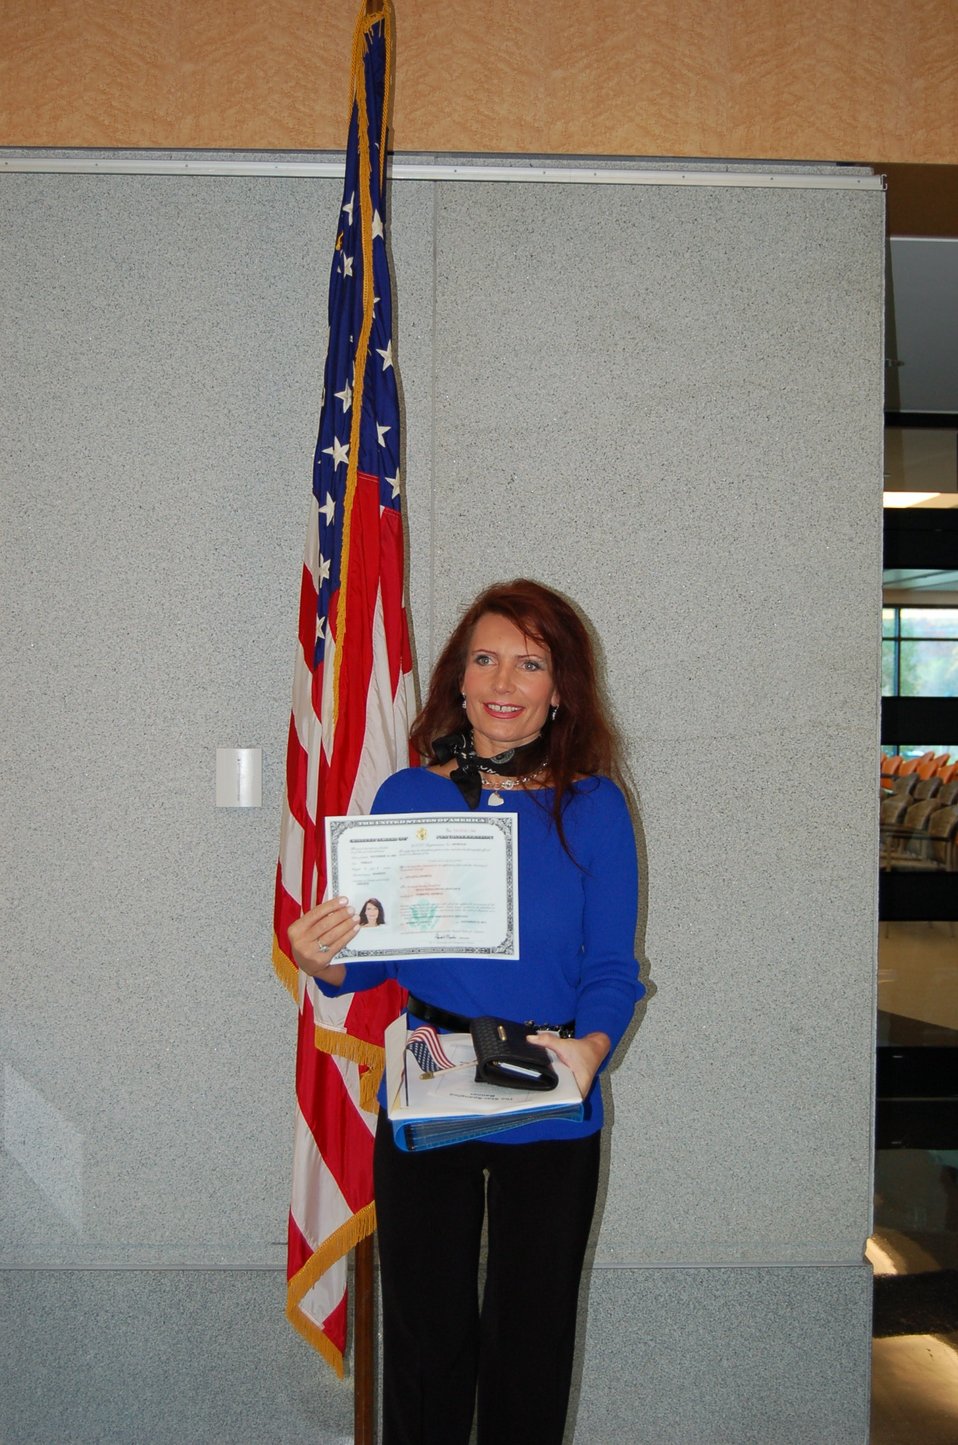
New Citizens